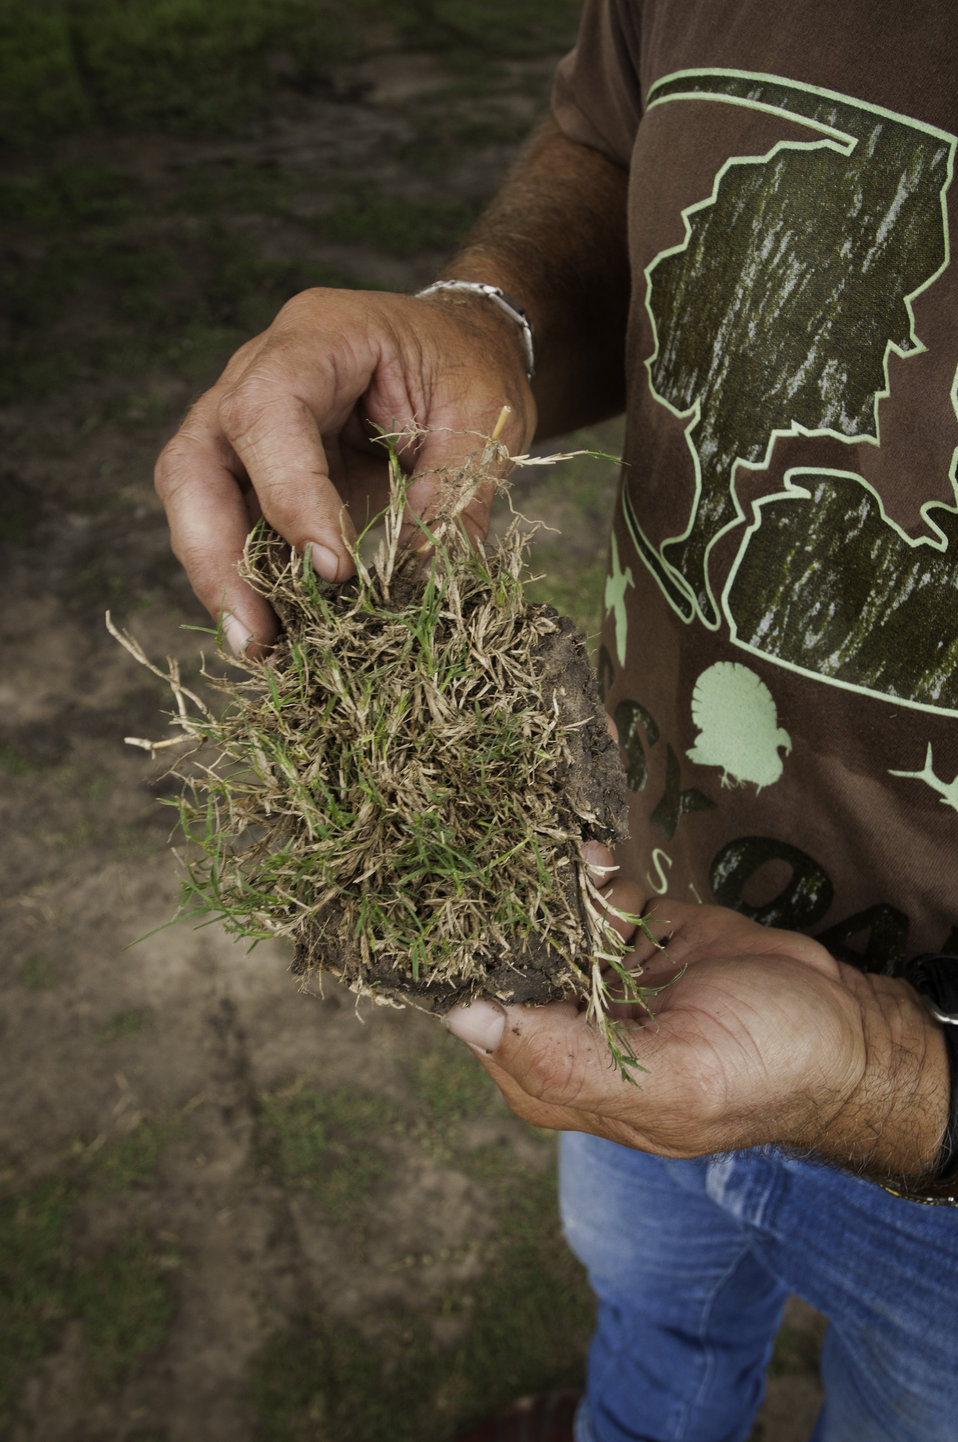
Quality Turf Farms owner Boston Brown checks the quality of the roots of the sod harvested on his turf farm in Guy, TX on Aug. 23, 2013.